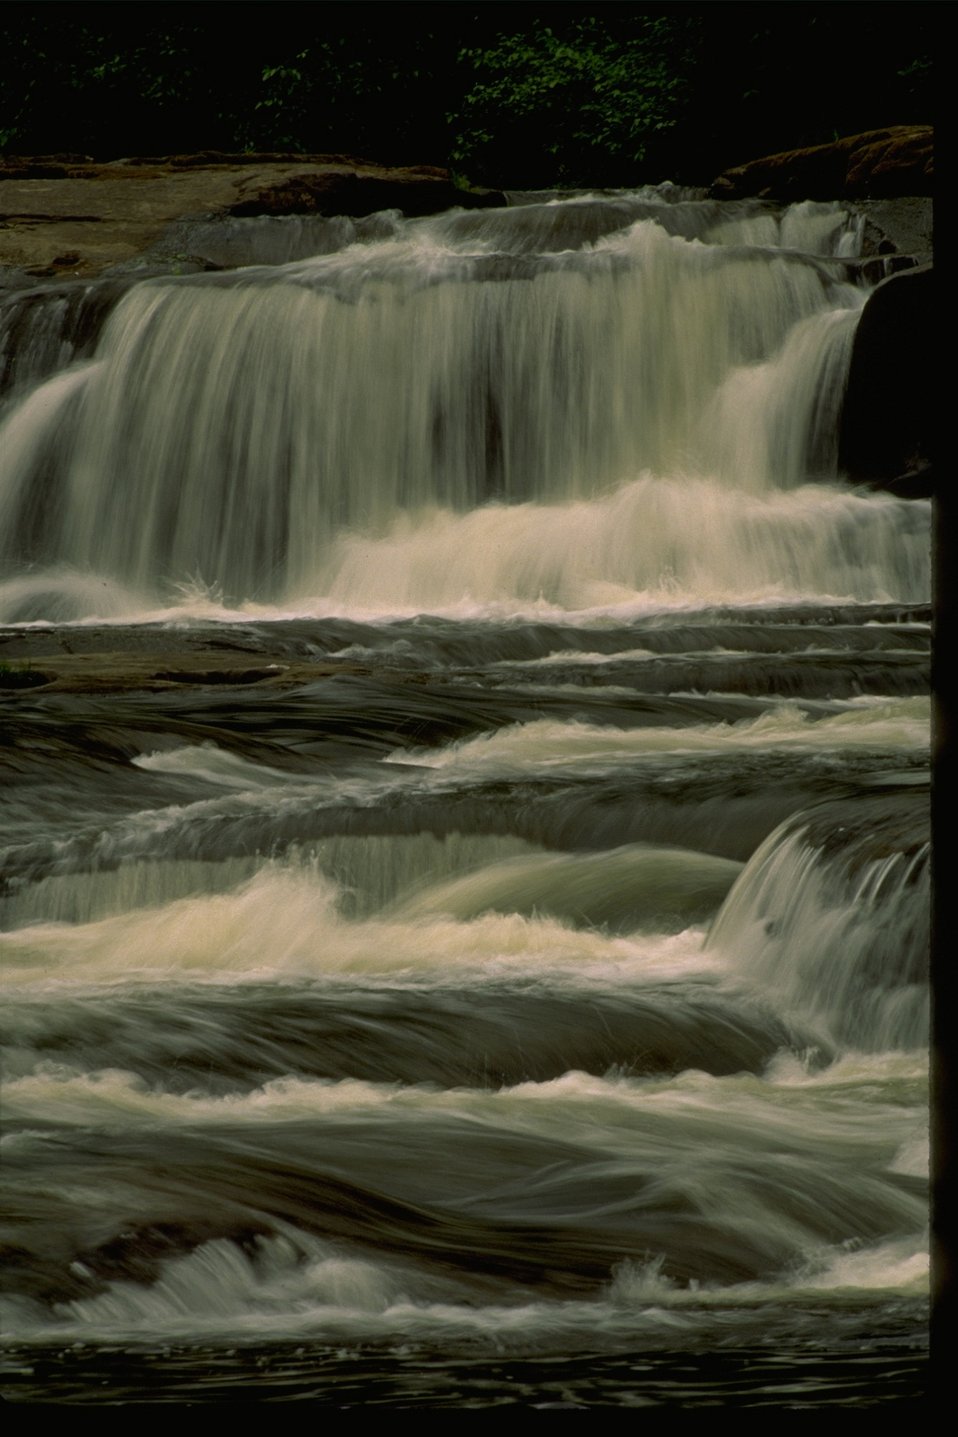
Smith River Falls.